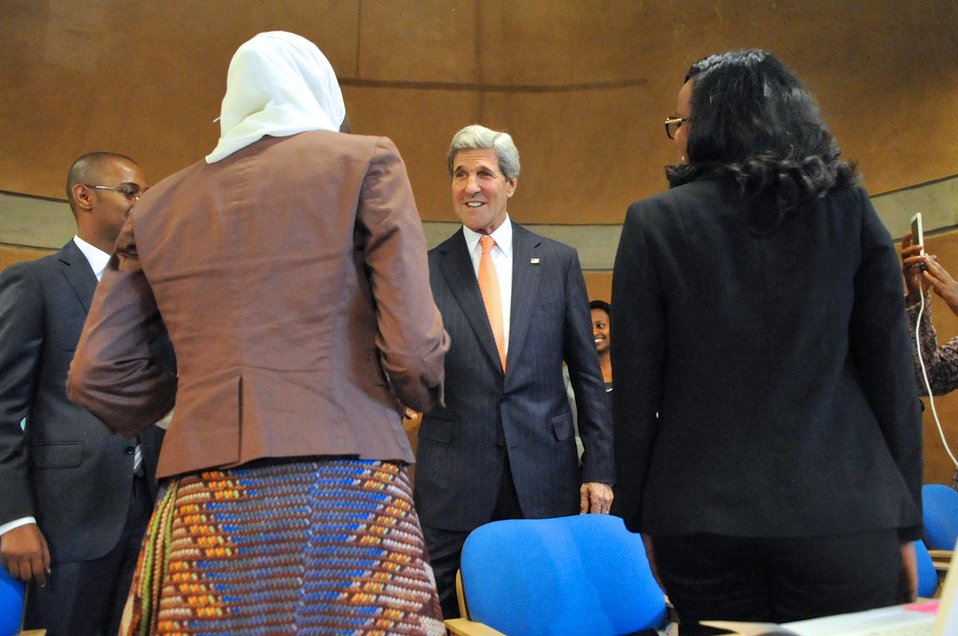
Secretary Kerry Meets Bloggers

U.S. Secretary of State John Kerry meets Young African Leadership Initiative participants who planned to tweet about his speech on Africa policy at a botanical garden outside Addis Ababa, Ethiopia, on May 3, 2014.